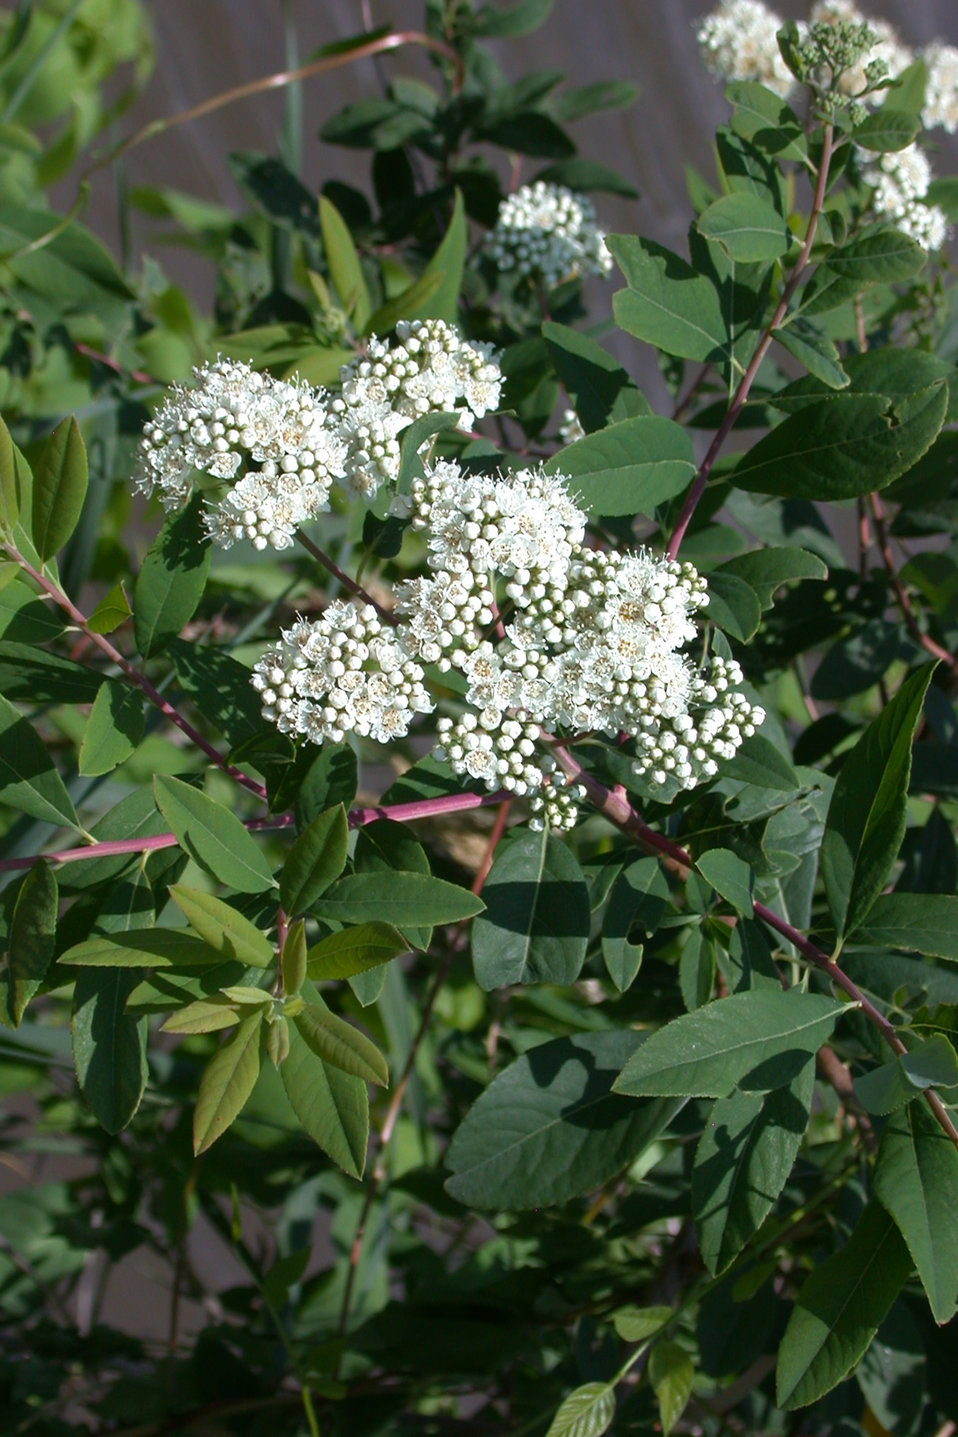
Virginia spiraea (Spiraea virginiana).